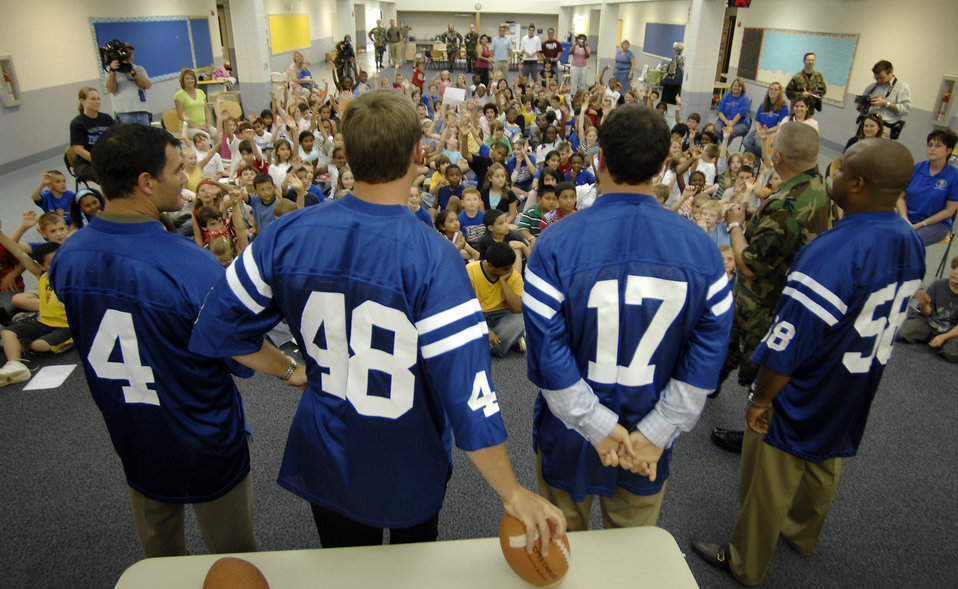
Indianapolis Colts visit Randolph Air Force Base

Indianapolis Colts (left to right) Adam Vinatieri, Justin Snow, Hunter Smith and Gary Brackett talk to kids at Randolph Elementary School on Randolph Air Force Base, Texas, June 1. Colts team members spent the day visiting with base personnel and school children, enhancing the already strong relationship between the team and the Air Force.